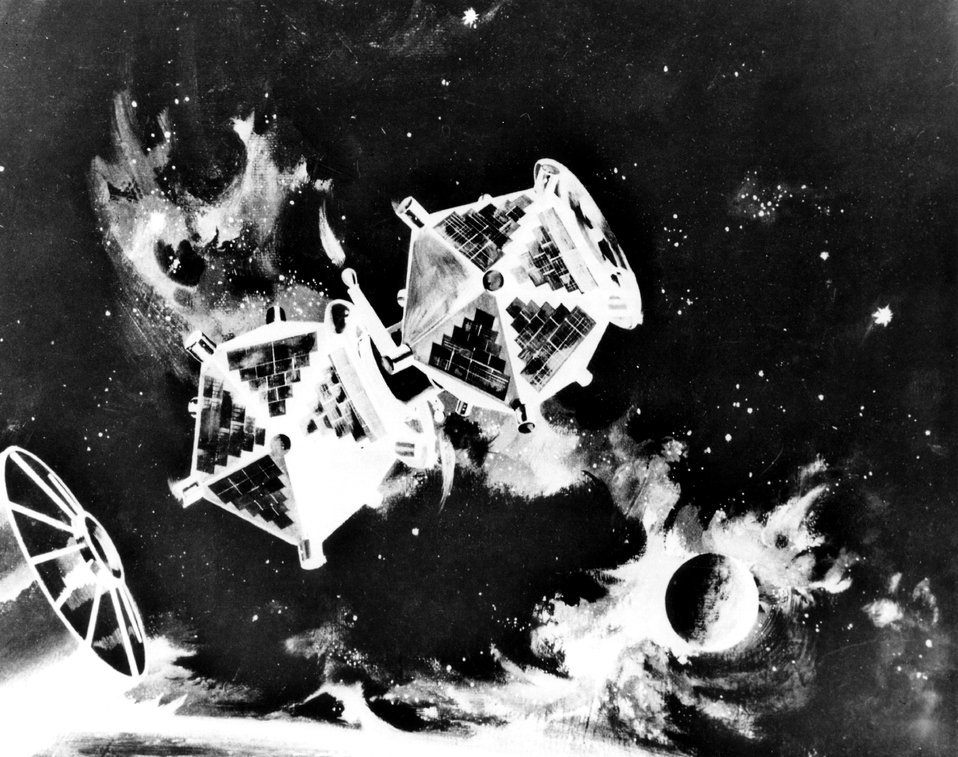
At the end of 1964, four Vela nuclear detection satellites were in orbit about 68,000 miles from earth. Drawing is an artist's conception of how the Vela satellites looked after separation from the booster (lower left) and before they were put in orbit in deep space. c. 1965